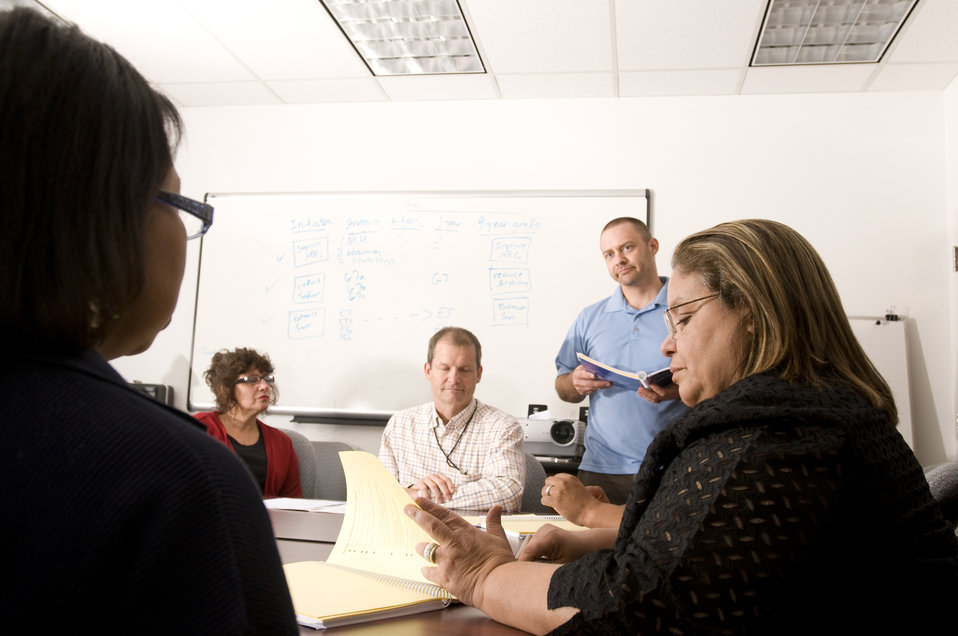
This image depicts a group of healthcare workers seated at a table discussing a strategy they would be implementing, which would guide them through an instructional campaign centered on the education of the diabetic patient to the healthy lifestyle one must implement in order to maintain control over the detrimental effects of this disease.